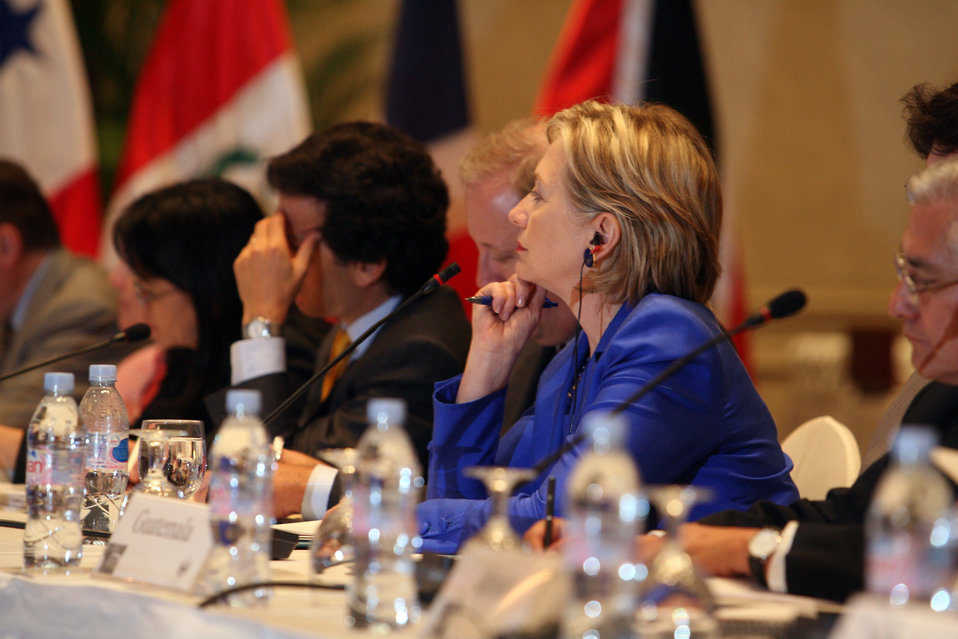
Second Pathways to Prosperity Ministerial Meeting

U.S. Secretary of State Hillary Rodham Clinton listens to one of the participants of the Second Pathways to Prosperity Ministerial Meeting held in San Salvador on May 31, 2009. Diplomats from more than a dozen countries of the Western Hemisphere met to discuss mechanisms for strengthening trade and investment, cooperation, and business facilitation in the region.